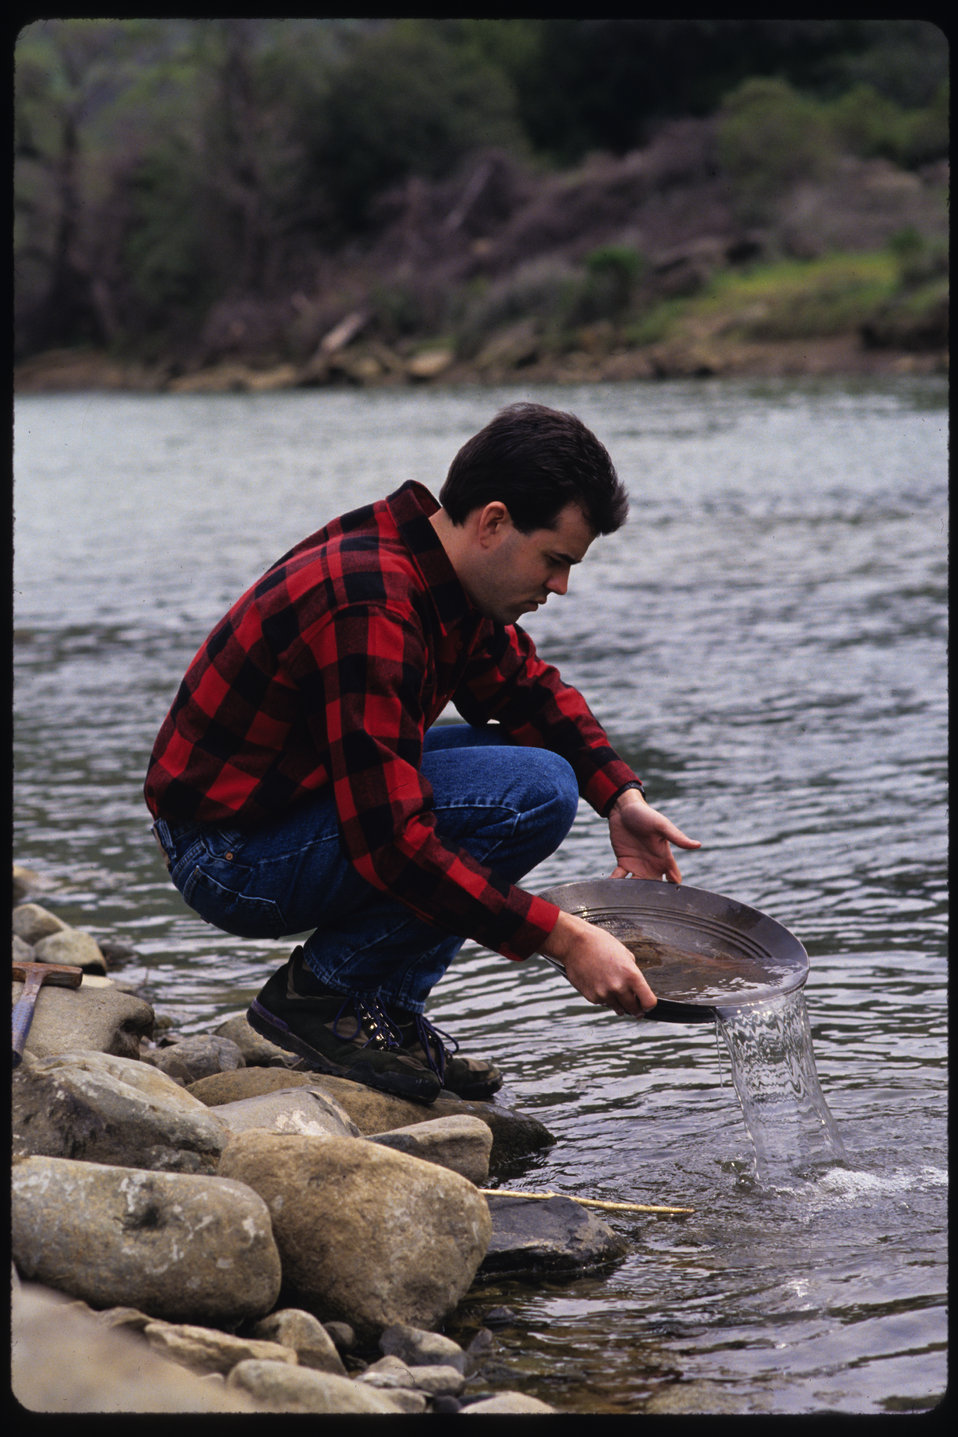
SACRAMENTO,Calif. (June 1,1988)--Gold mining is a part of California history, Mark Cowan of the Planning Division of the Sacramento District here tries his luck with the pan on the American River.